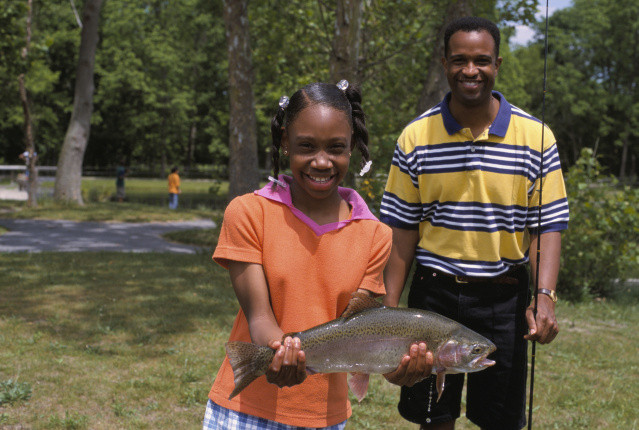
catching a rainbow